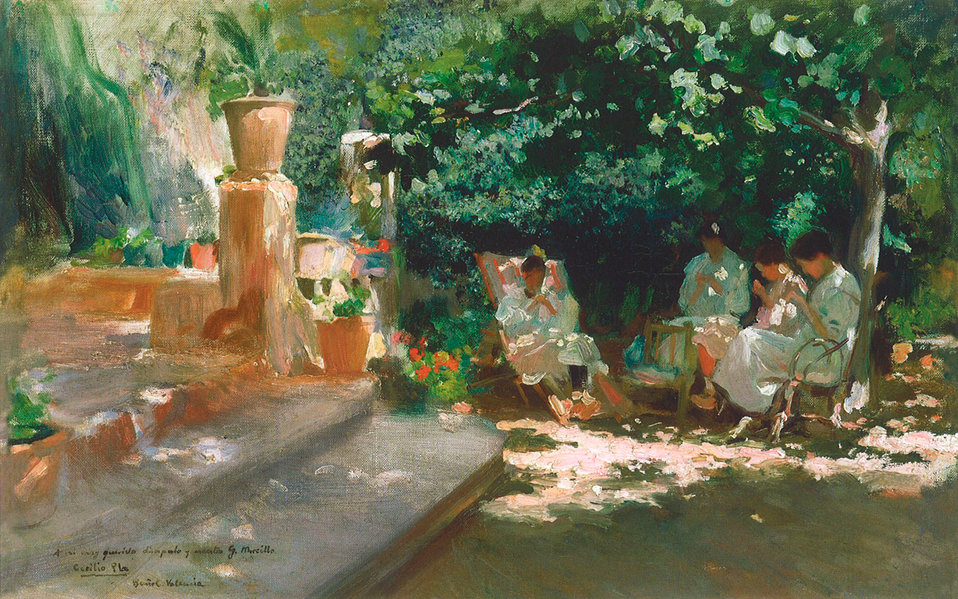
Ladies in the Garden. Oil on canvas, 42.1 x 66.4 cm, Inv. CTB.1997.93 Museo Carmen Thyssen Native name Museo Carmen Thyssen Location Málaga, Spain Coordinates 36° 43′ 17″ N, 4° 25′ 22″ W Established 2011 Website www.carmenthyssenmalaga.org